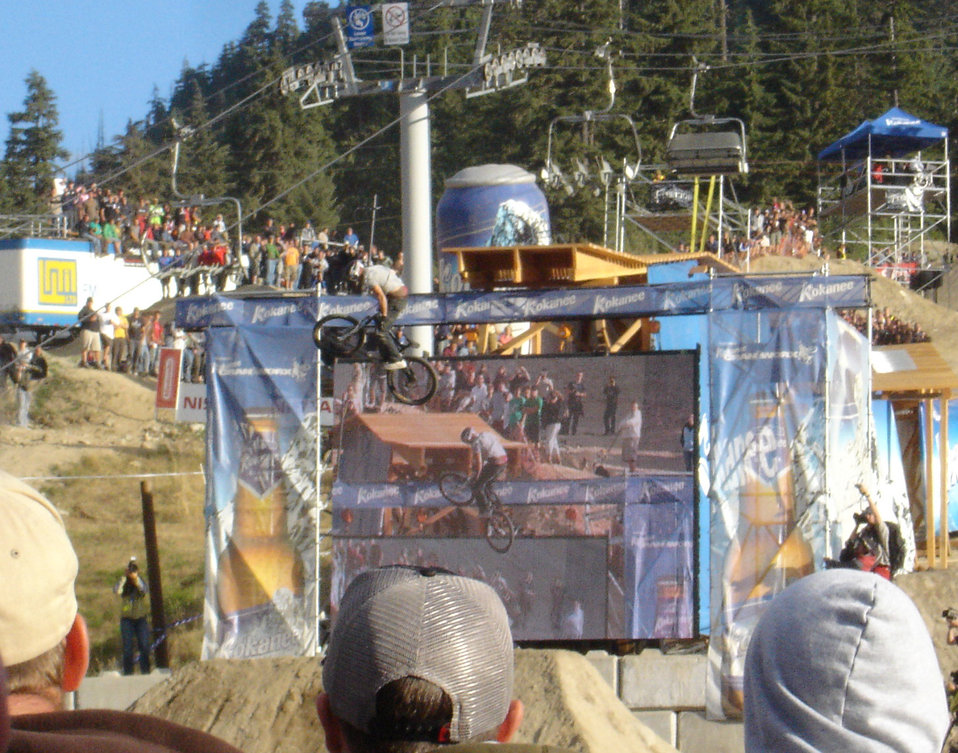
This is Cameron Zinc leap from the 'Gap-o-Tron' that won him the Slopestyle competition at Crankworx 2006 at Whistler.